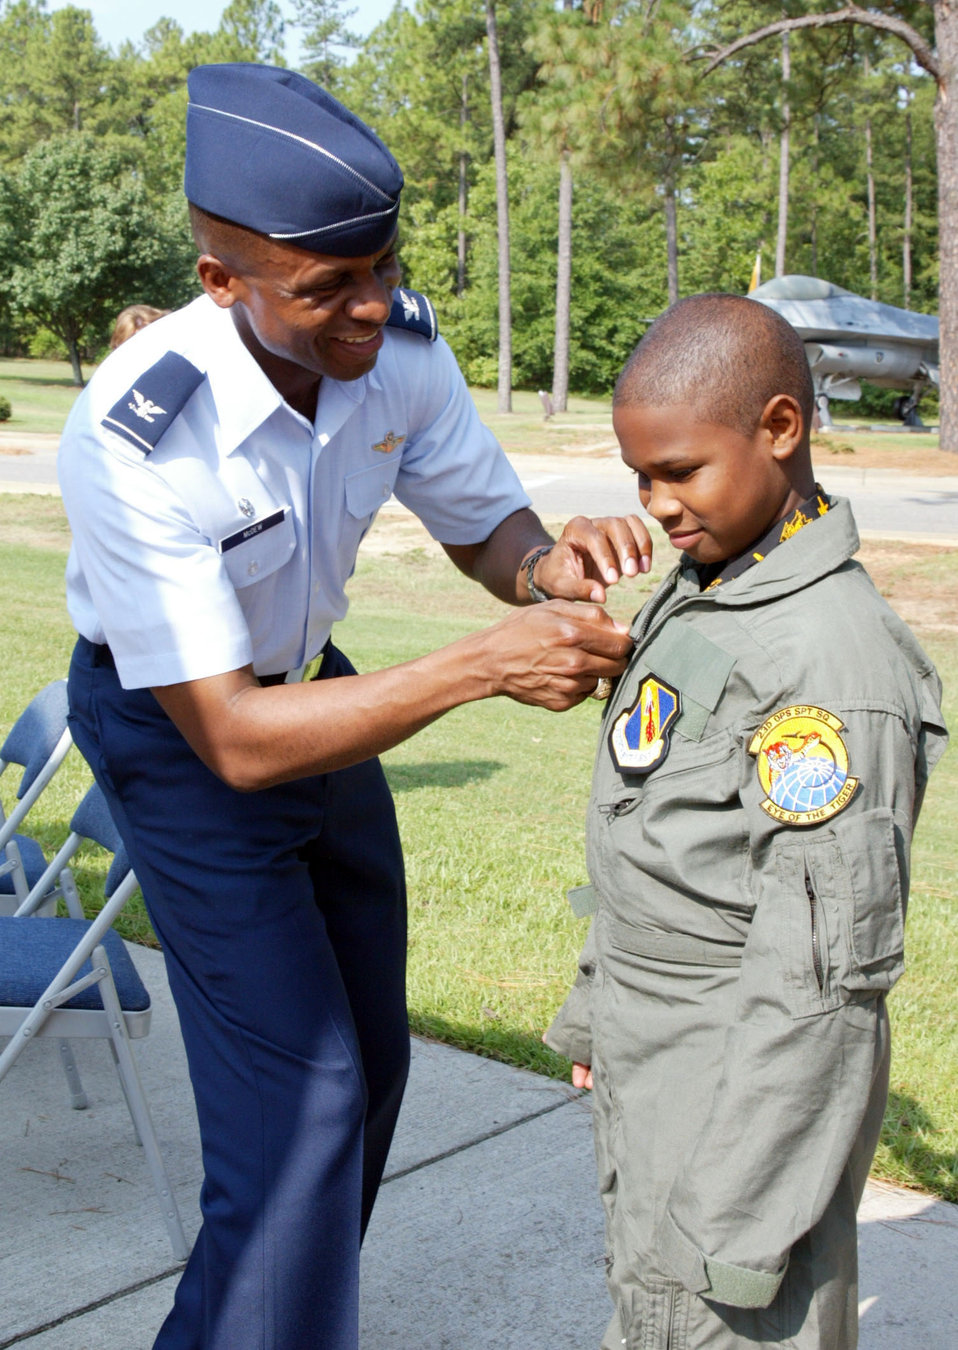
Young hero

POPE AIR FORCE BASE, N.C. -- Col. Darren McDew replaces a patch on the jumpsuit 8-year-old Jonathan Cruz is wearing with his nametag. Jonathan is a survivor of non-Hodgkin's Lymphoma and was given a tour of the base, treated to an A-10 Thunderbolt II simulator and received numerous awards and gifts. Colonel McDew is the 43rd Airlift Wing commander.